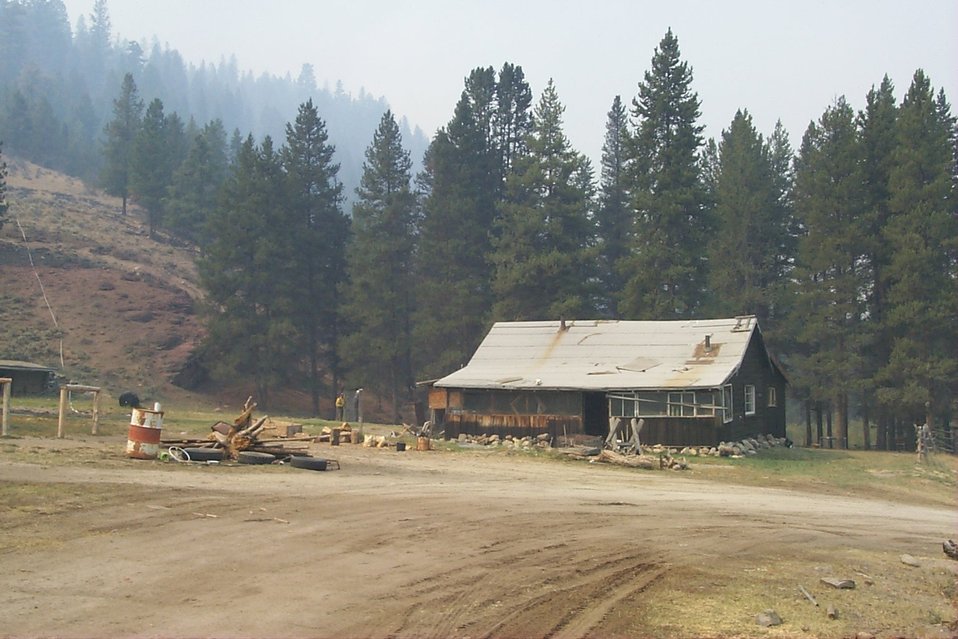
Urban interface Fire Clearwater Fire Salmon Field Office USRD Upper Snake River District